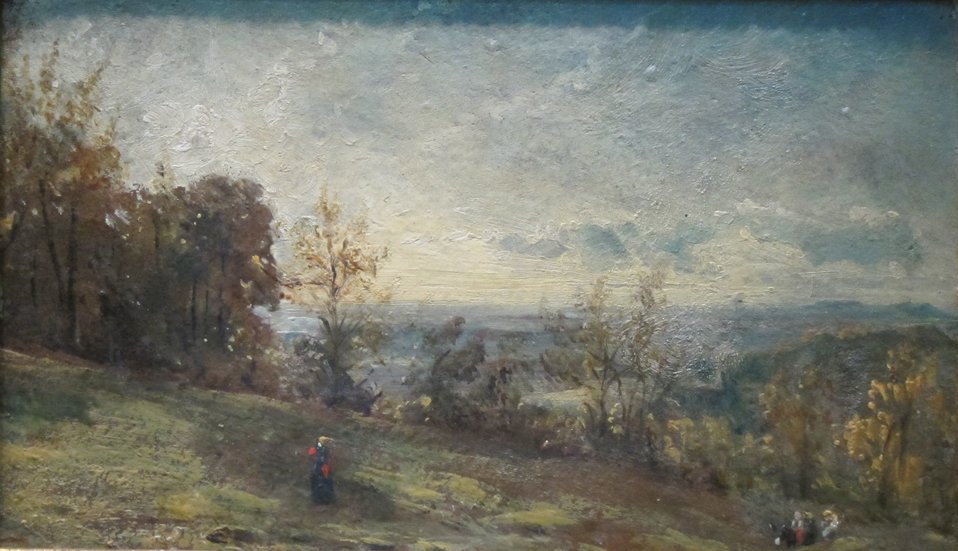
Hempstead Heath – Fine Evening, oil on cardboard painting by John Constable, 1820, long-term loan to the Dayton Art Institute